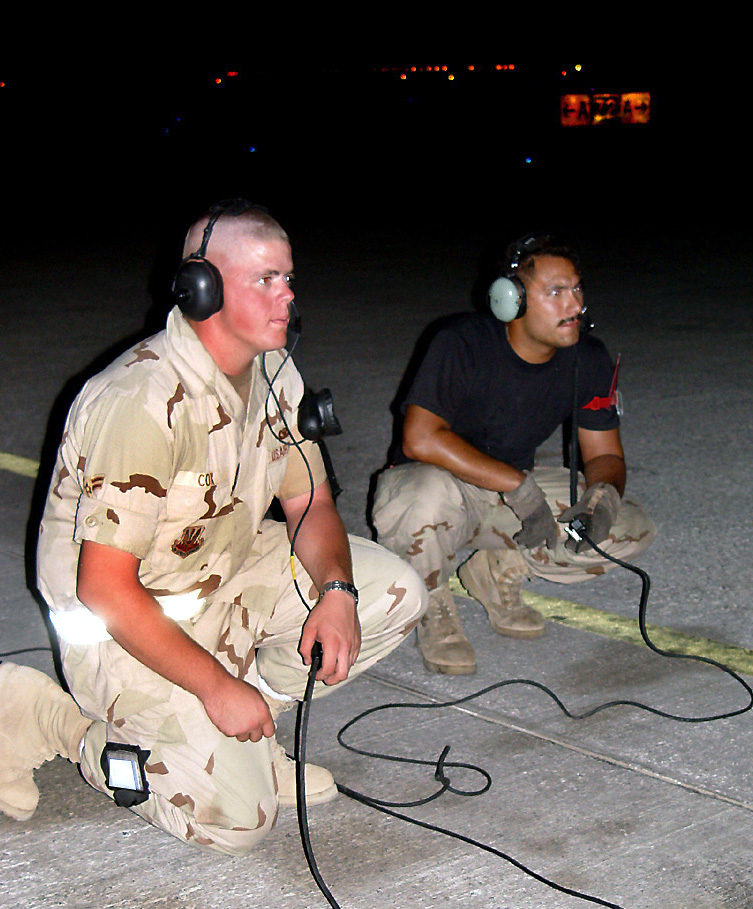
Crew chief for a day

OPERATION ENDURING FREEDOM -- Airmen 1st Class Andrew Cox (left) and Joshua Massey prepare to launch a KC-135 Stratotanker on a night mission supporting Operation Enduring Freedom. Cox is assigned to the 380th Expeditionary Security Forces Squadron, and was given the opportunity to be a crew chief for a day. Massey is a KC-135 crew chief from the 380th Expeditionary Aircraft Maintenance Squadron.